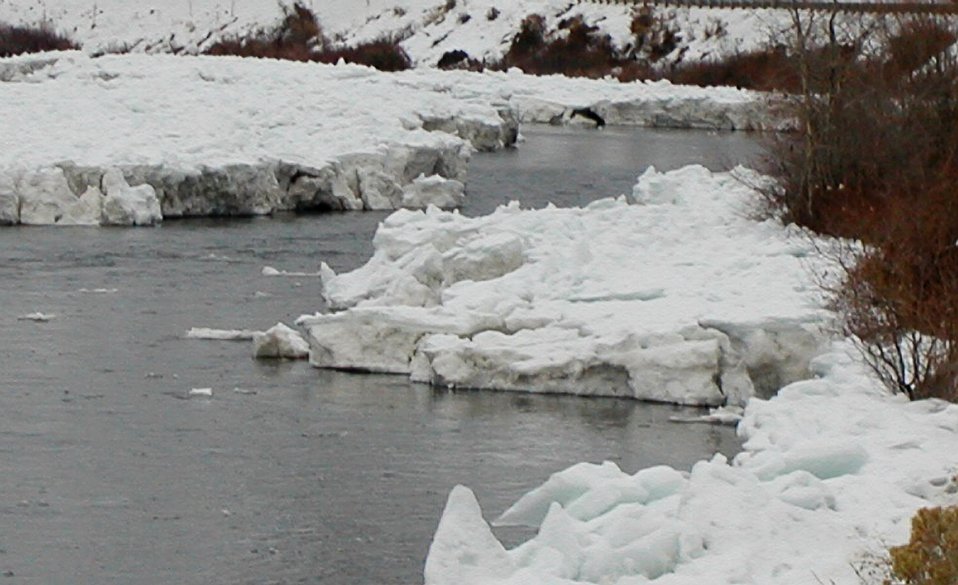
With temperatures remaining in the teens, the ice built up on a river meander which seems to start at the BLM's Big Pine Recreation Site. From here the water and ice wind their way past the giant Roza alluvial plain, where Roza creek now drains to the Yakima River. The ice continues further downstream past the mouth of Burbank Creek and on to the Roza recreation site.